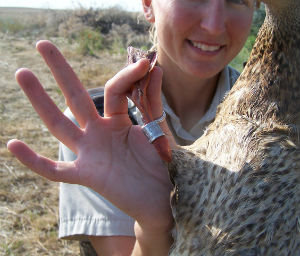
Duck Banding

Mallard with a new band on the leg. Duck banding on Bowdoin NWR